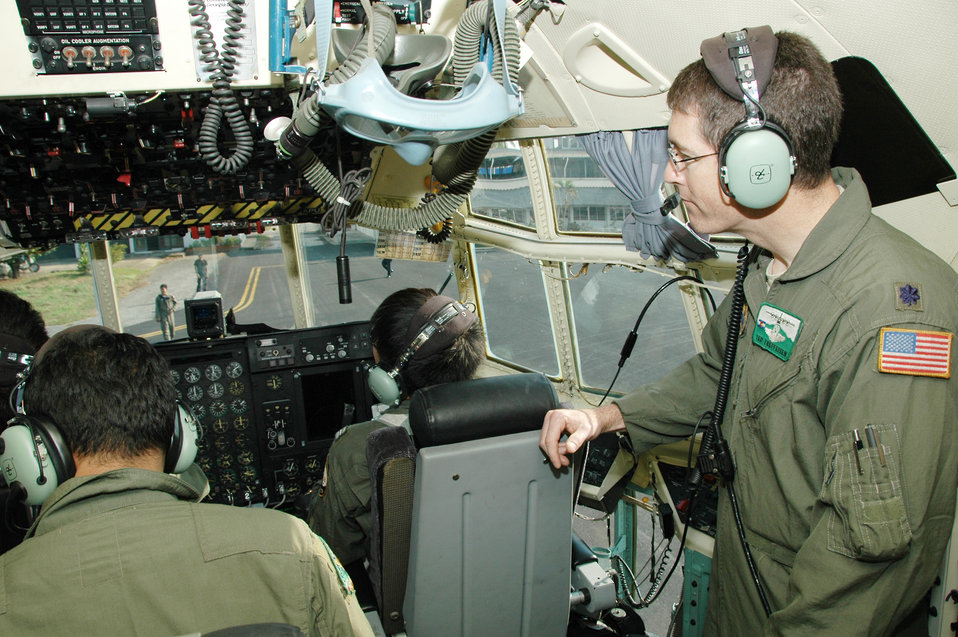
Lt. Col. Ted Treffeisen observes members of the Royal Thai air force run preflight checklists

Lt. Col. Ted Treffeisen observes members of the Royal Thai air force as they run preflight checklists at Phitsanulok Royal Thai Air Force Base, Thailand. Seven members of the 302nd Airlift Wing traveled to Thailand to provide expert training to RTAF members on safe and effective modular airborne firefighting system operations. Colonel Treffeisen is the chief of training for the Air Force Reserve's 302nd AW based at Peterson AFB, Colo.